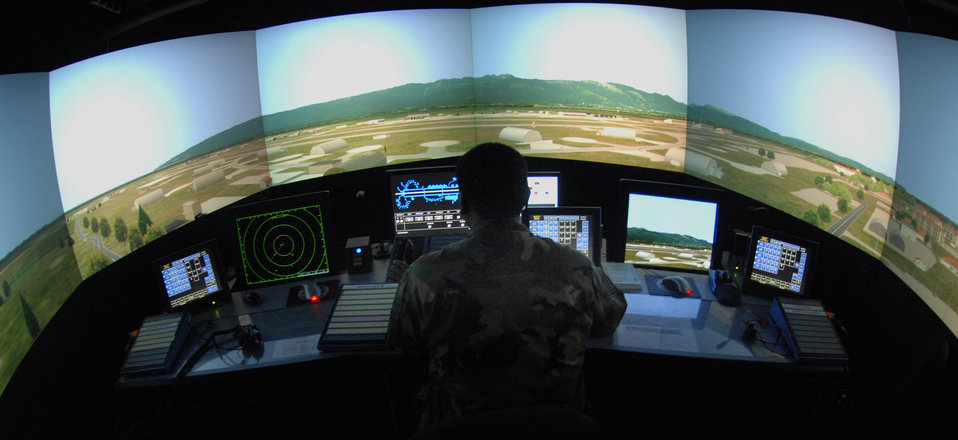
Tower stays on top of things

Tech. Sgt. Kevin Cobb uses the air traffic control simulator Nov. 28 at Aviano Air Base, Italy. The simulator is used to train air traffic controllers on specific situations unique to Aviano AB. It can also be used to train outgoing members on their future bases' airspace scenarios. Sergeant Cobb is a member of the 31st Operations Support Squadron.